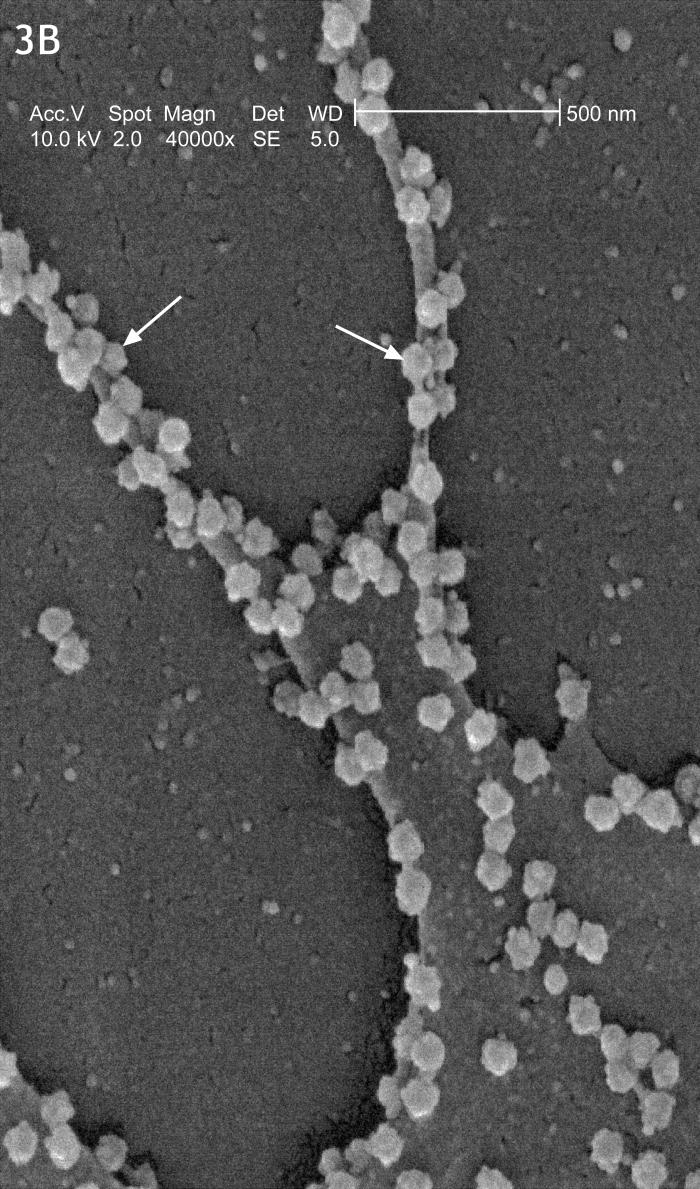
This scanning electron micrograph reveals the exportation of virus particles (arrows) at the pseudopodial and cell surfaces.